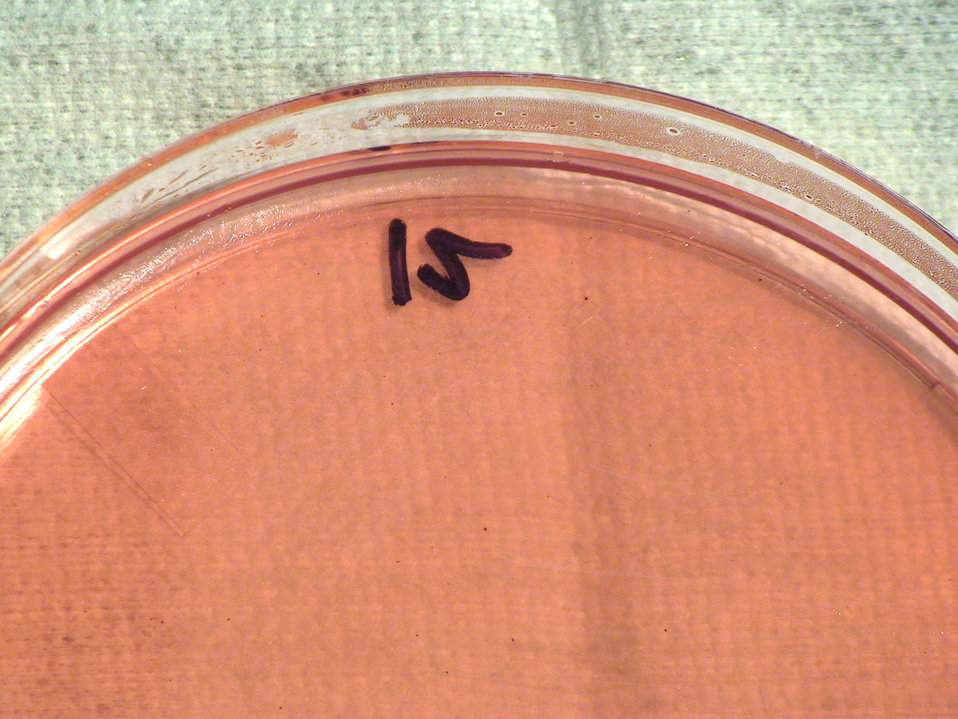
As a closer view of PHIL 12442, this photograph depicts the colonial morphology displayed by Gram-negative Francisella tularensis bacteria, which was grown on a medium of MacConkey agar, for a 24 hour time period, at a temperature of 37�C. This bacterium is both an animal, and a human pathogen, and is responsible for causing the disease known as tularemia.